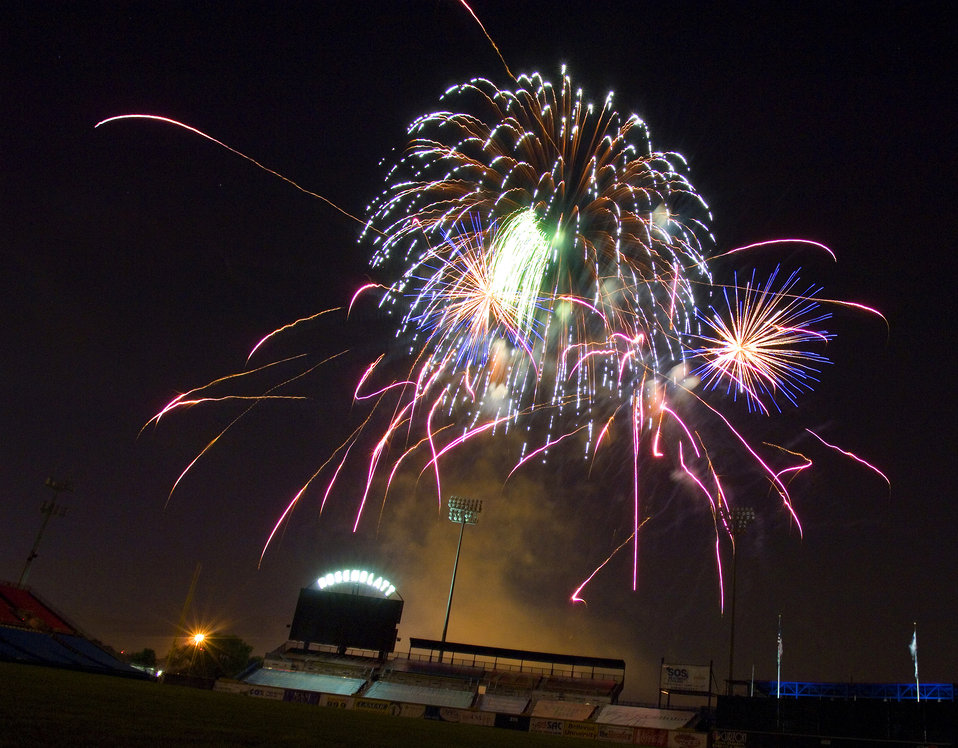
Air Force Week in the Heartland kicks off with a bang

Fireworks light up Rosenblatt Stadium at the conclusion of opening ceremonies for Air Force Week in the Heartland Aug. 9 in Omaha, Neb. The week is designed to broaden awareness of the Air Force's role in the war on terrorism and strengthen support for Airmen serving worldwide in defense of freedom.